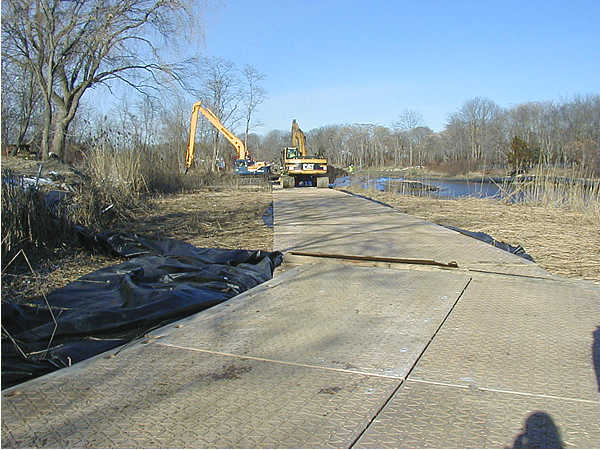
Winter 2003, Carefully working along the shoreline